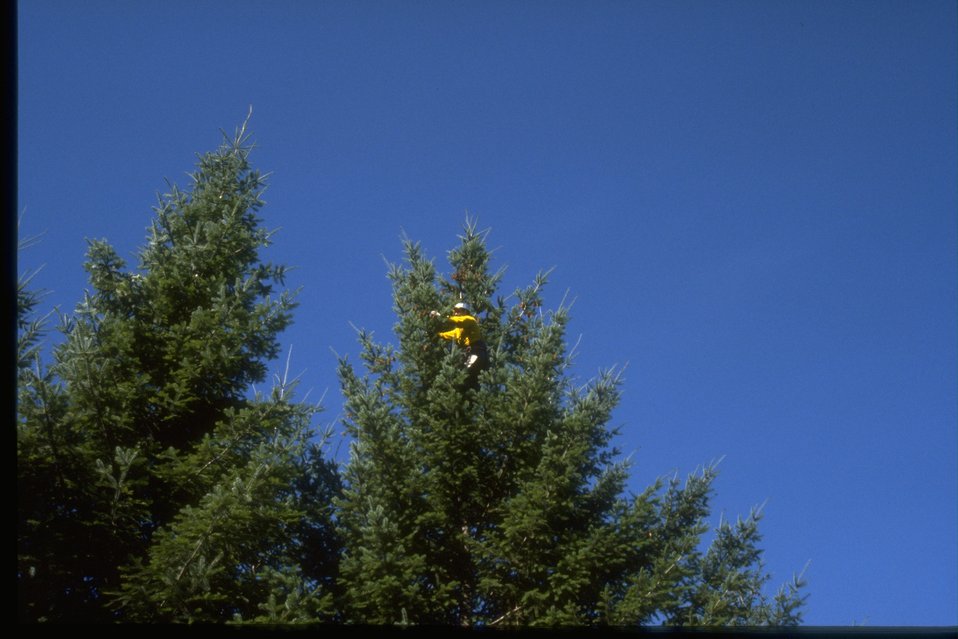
Seed Cone Collection